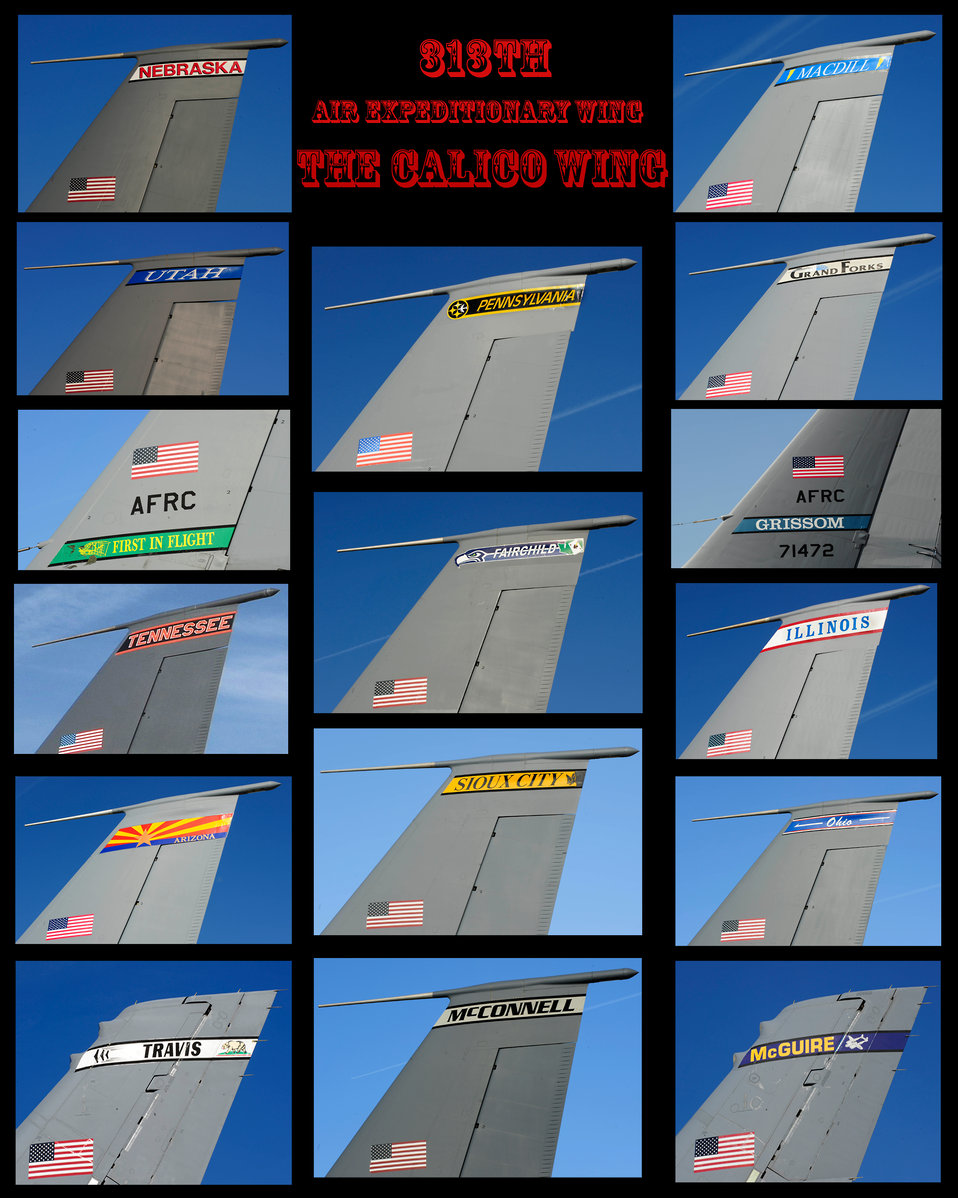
The calico wing

The 313th Air Expeditionary Wing, which is supporting Operation Unified Protector, was given a nickname Calico Wing by the wing's commander, Brig. Gen. Roy Uptegraff. The 313th AEW operates from an air base in Western Europe. Operation Unified Protector is part of the international response to the unrest in Libya and enforcement of United Nations Security Council Resolution 1973 of a no-fly zone over Libya.